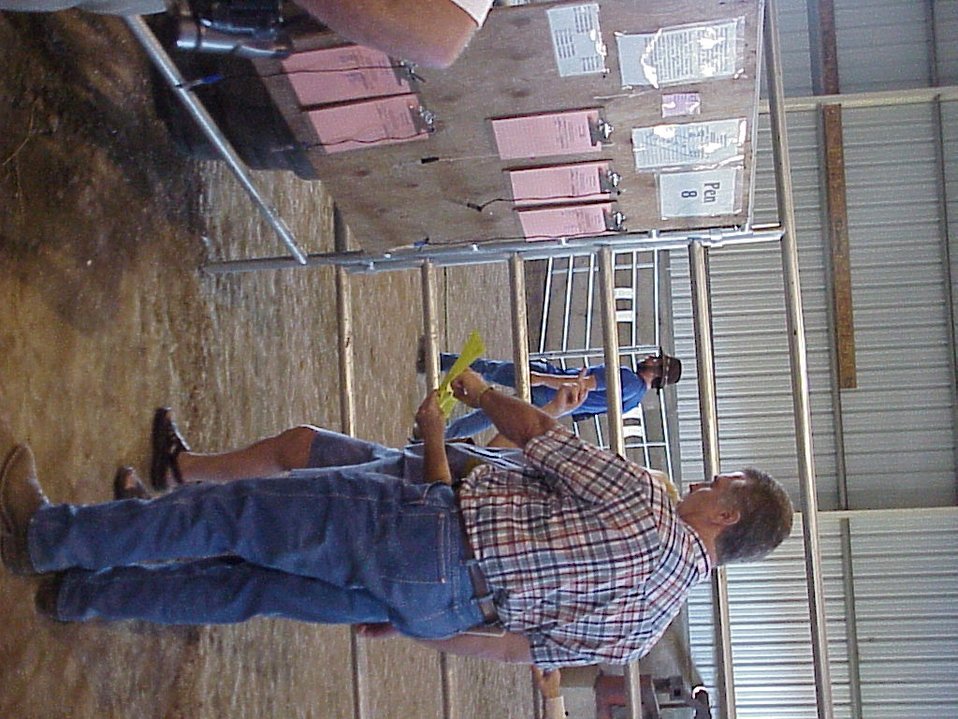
Lewiston Wild Horse and Burro Adoption Program Auction WHB indoor auction Cottonwood Field Office UCSC Upper Columbia Salmon Clearwater District